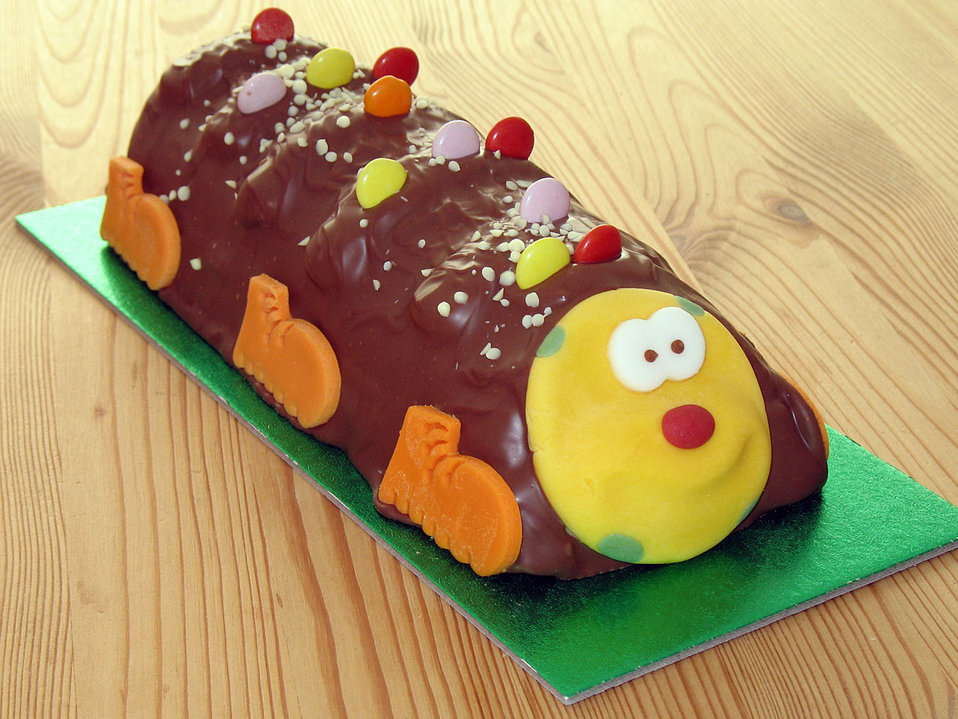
Chocolate cake

Children's chocolate cake in caterpillar shape.